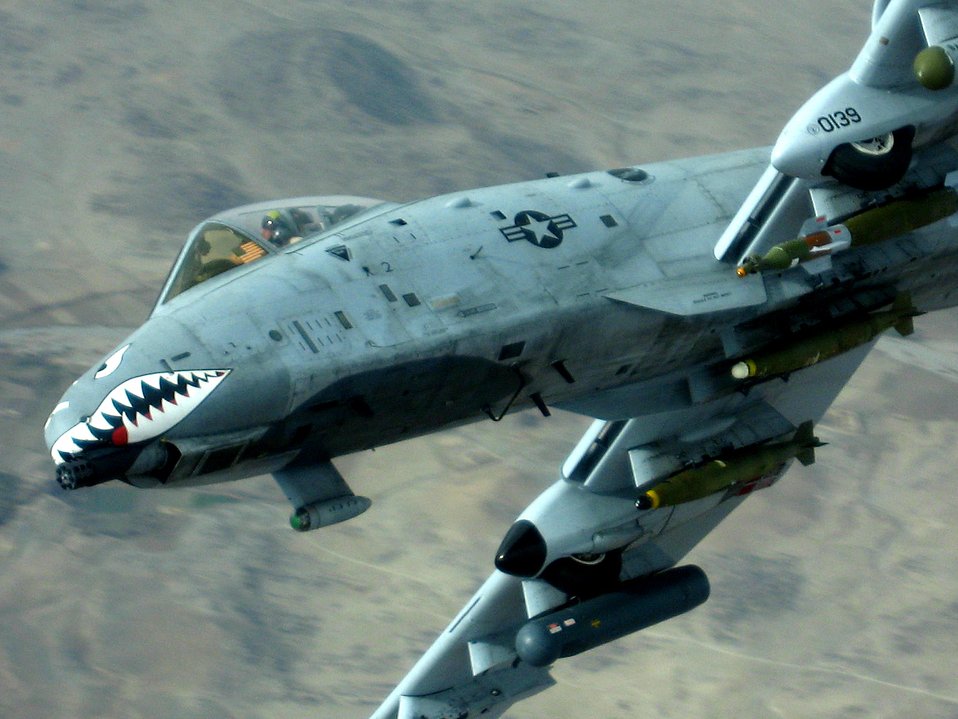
Gas and go

An A-10 Thunderbolt II pulls away after receiving fuel from a KC-10 Extender flying over Afghanistan Dec. 14. The tanker is from the 380th Air Expeditionary Wing, home of the largest air refueling wing in Southwest Asia. Unit aircrews fly KC-10s and KC-135 Stratotankers in support of wartime operations.